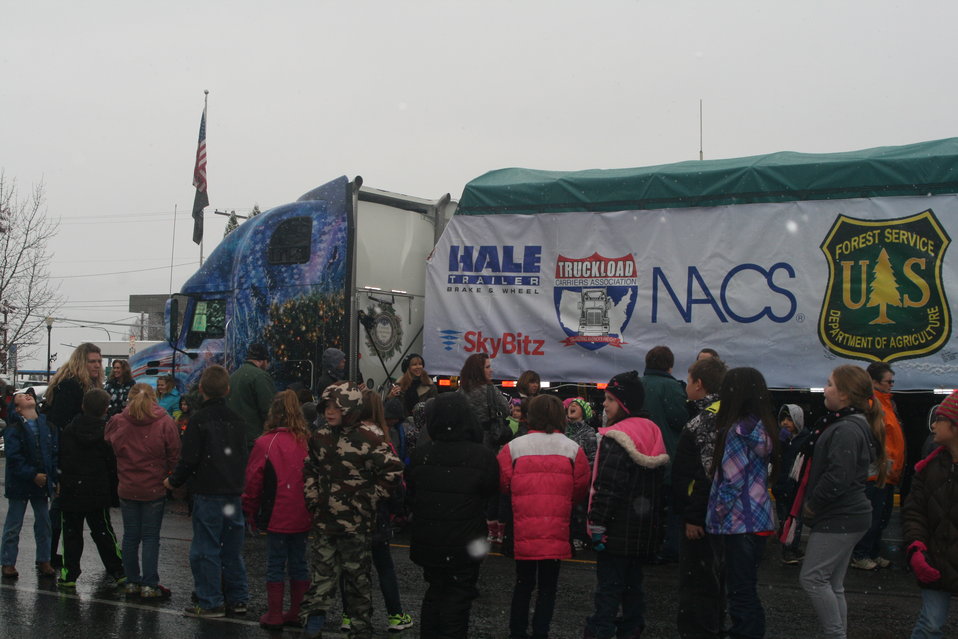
Colville, WA stop

The Capitol Christmas Tree arrives in Colville, Wash. on its cross-country trip. The flatbed trailer is framed to keep the branches of the 2013 U.S. Capitol Christmas Tree protected for its long journey from Washington State to Washington, D.C. Plywood completes the cocooning, and a special section at the top of the tree is equipped with decorated “windows” to allow the public to catch a glimpse during stops along the way.